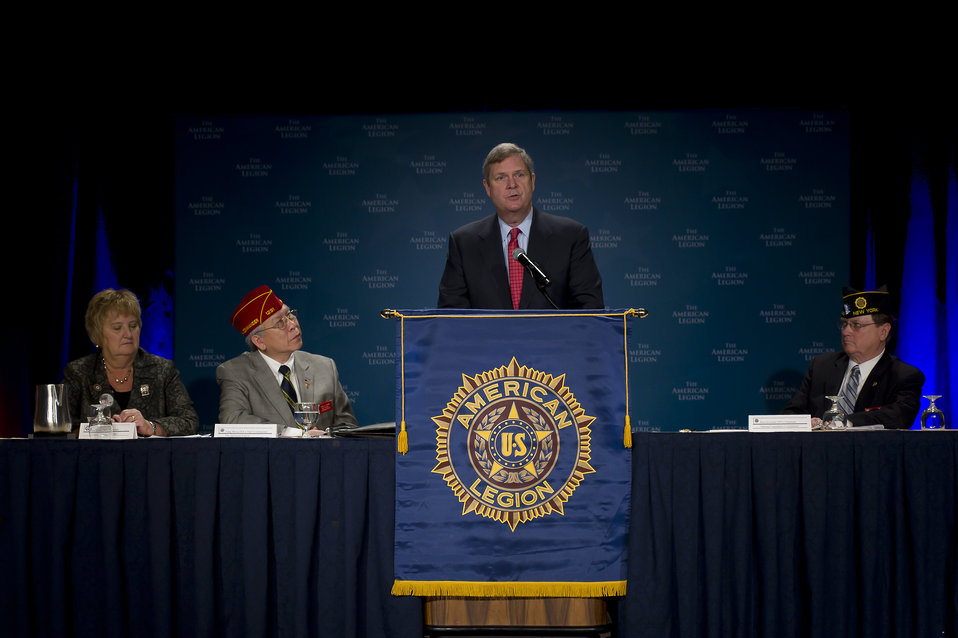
U.S. Secretary of Agriculture Tom Vilsack speaks to the American Legion prior to signing a memorandum of understanding with the American Legion which will help our Nation's veterans and transitioning military service members find positions that promote agriculture, animal and plant health, food safety, nutrition, conservation and rural communities at the Washington Hilton in Washington, D.C., on Tuesday February 28, 2012.